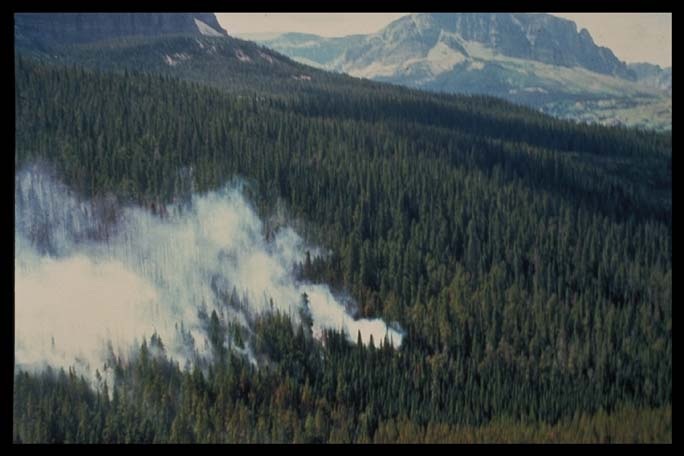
Wildland fire